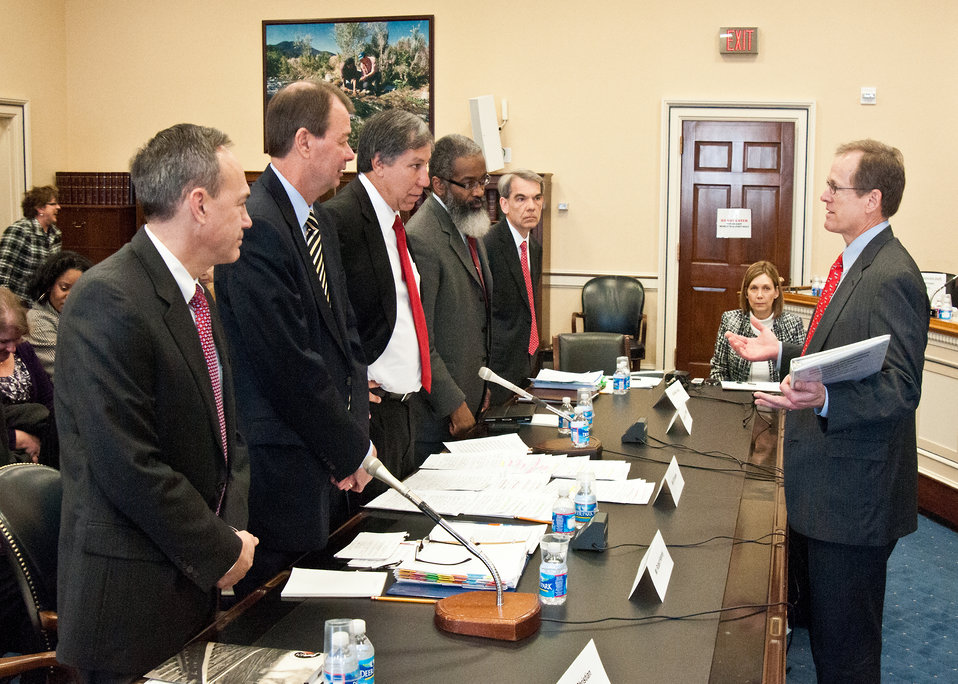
Congressman Jack Kingston, Georgia, Chairman of the House Agriculture Appropriations Committee welcomes Alan Christian, Acting Administrator, Grain Inspection Packers and Stockyards Administration, Robert Keeney, Acting Administrator, Agricultural Marketing Service, Ed Avalos, Under Secretary, Marketing and Regulatory Programs, Dr. Gregory Parham, Administrator, Animal and Plant Health Inspection Service and Michael Young, Budget Officer prior to testifying on Capitol Hill before the House Agriculture Appropriations Subcommittee on fiscal year 2013 budget requests for Marketing and Regulatory Programs in Washington, D.C., Tuesday, March 6, 2012.